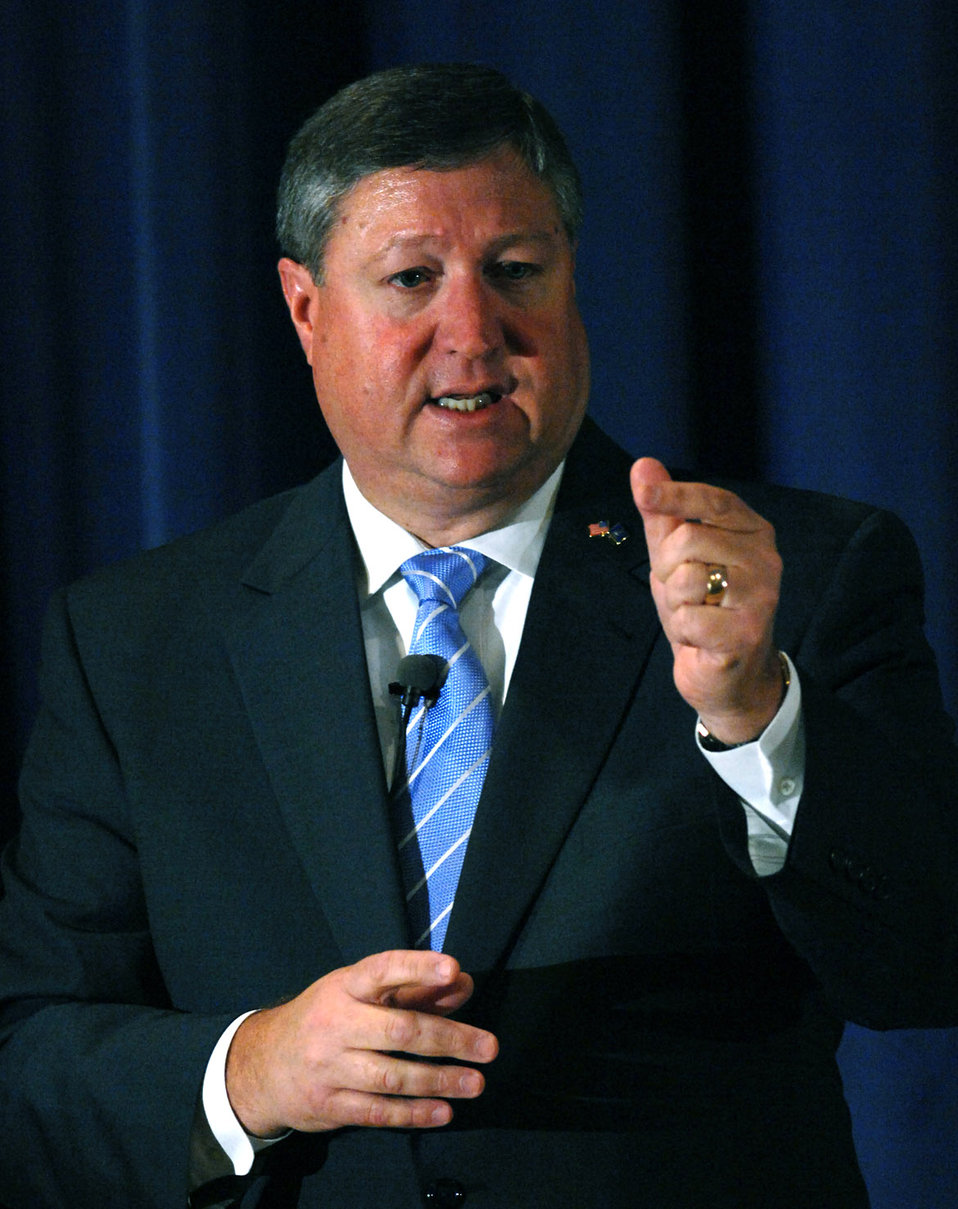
Acting secretary shares his perspective with Airmen

Acting Secretary of the Air Force Michael B. Donley held a town-hall style meeting with members of the Air Force Space Command July 1 at Peterson Air Force Base, Colo. In his first visit to an Air Force base, he outlined three perspectives for the audience: jointness, support to the war on terror and the welfare of Airmen. He candidly addressed the challenges facing the Air Force, in particular the nuclear enterprise issue.